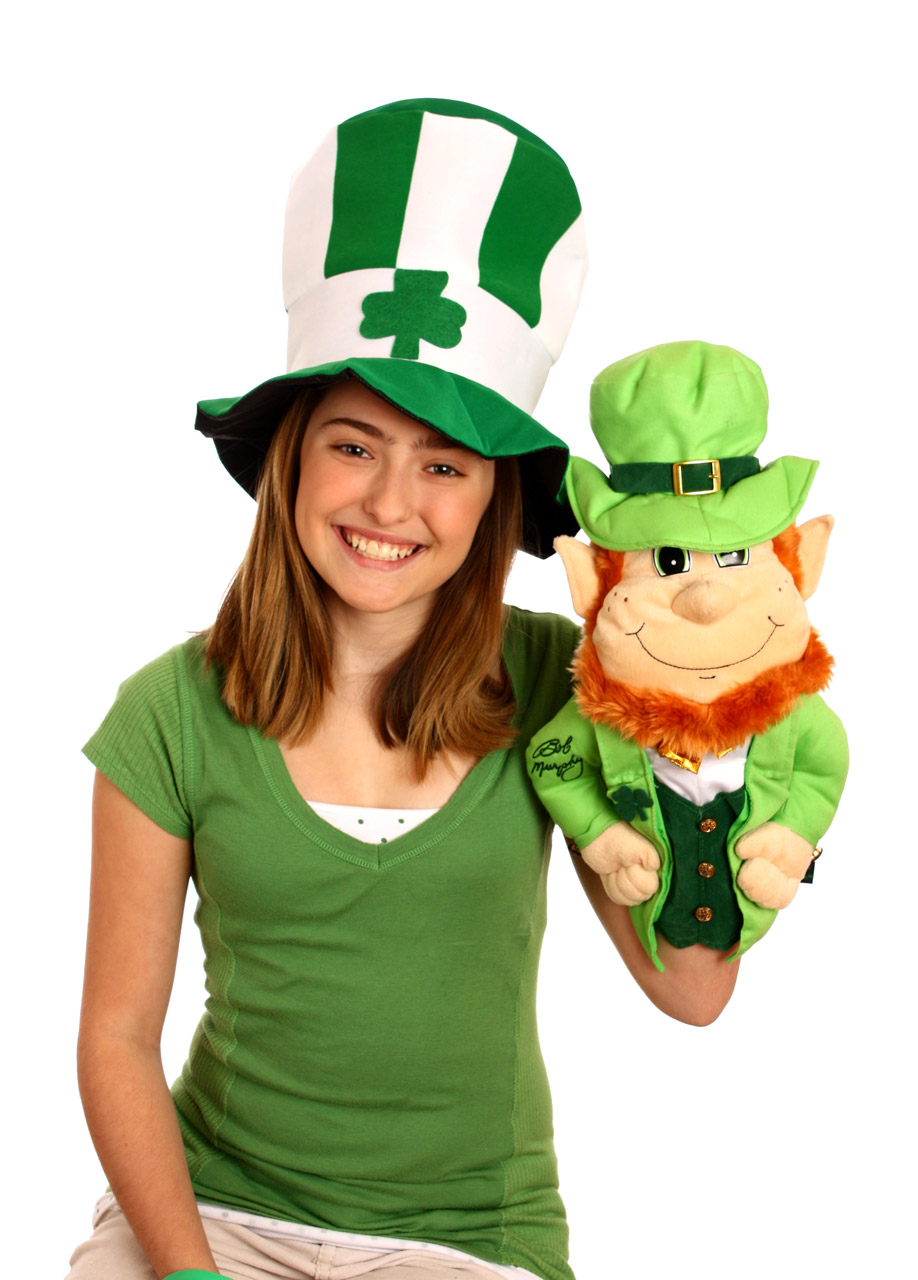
Saint patrick's day girl

A cute young girl dressed up for saint patrick's day holding a leprechaun puppet.